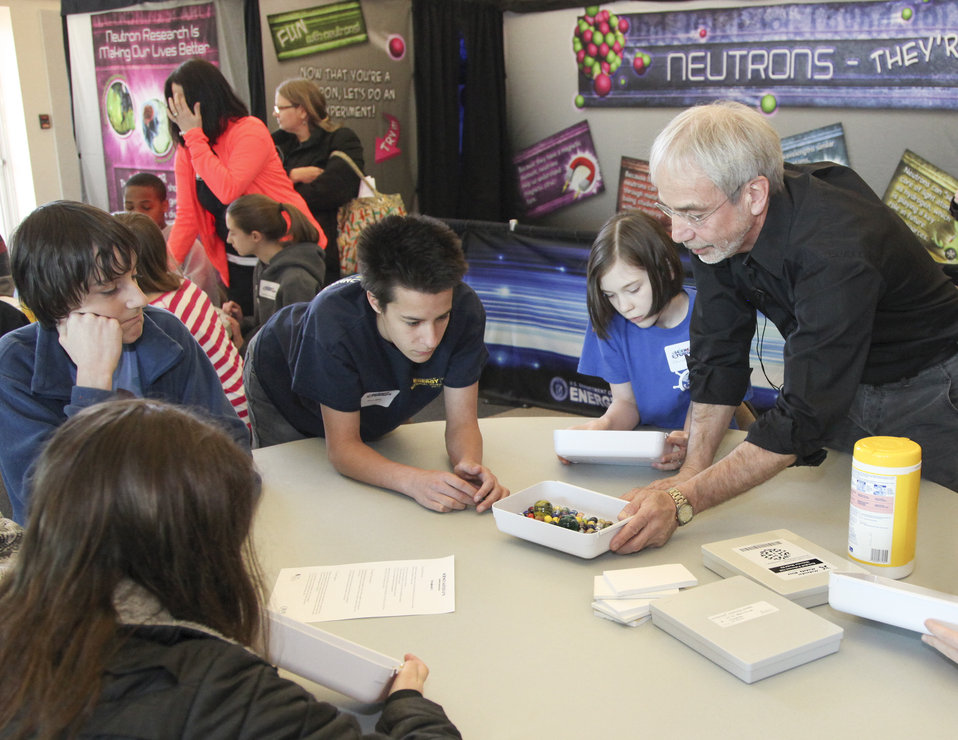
Hands-On Activities at 2013 Science Saturday at Oak Ridge National Laboratory.